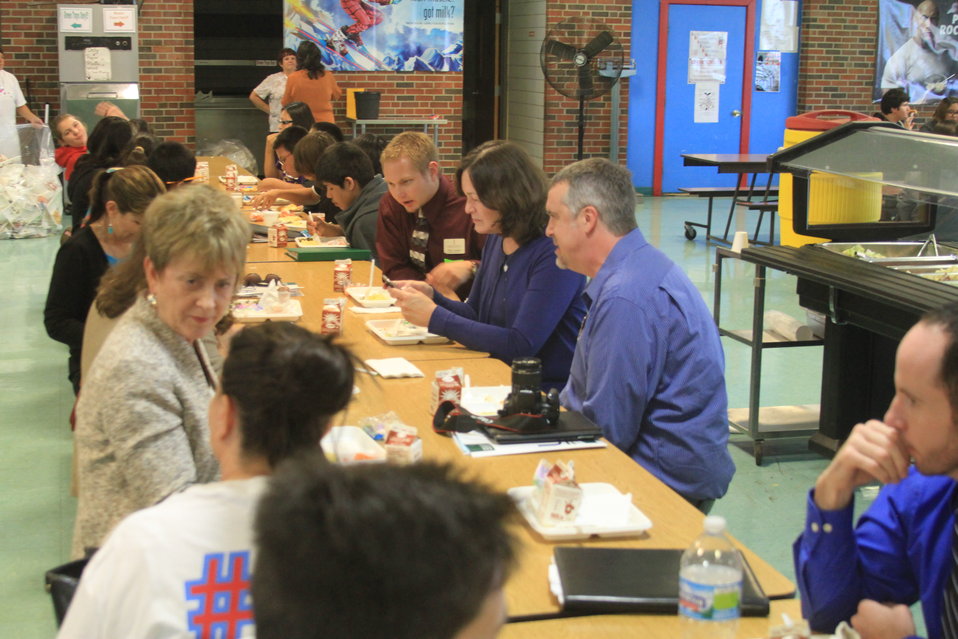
Stacie Lee talks Janey Thornton, U.S. Department of Agriculture, Under Secretary for Food and Nutrition Service (FNS) about the meals served to approximately 1250 students daily at the Cheyenne River School, on the Cheyenne River Indian Reservation, SD, on Tuesday, Sept. 24, 2013. USDA photo by Tim Potts.
.